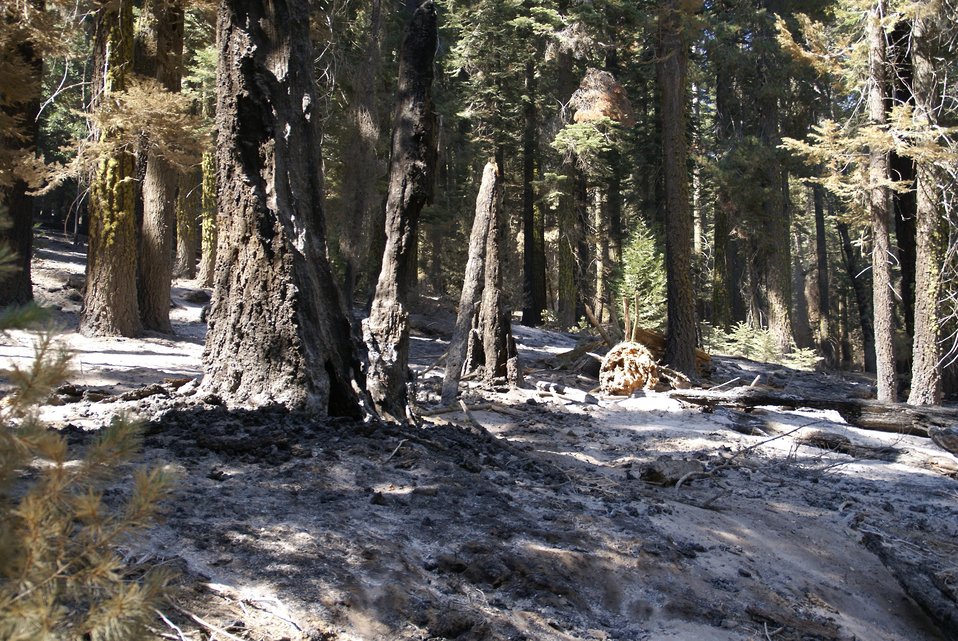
The East side of Bourland drainage area about a half-mile below the 3N01 road shows damage from the Rim Fire. BAER is a rapid assessment of burned watersheds by a BAER team to identify imminent post-wildfire threats to human life and safety property and critical natural or cultural resources on National Forest System lands and take immediate actions to implement emergency stabilization measures before the first major storms. Fires result in loss of vegetation exposure of soil to erosion and increased water runoff that may lead to flooding increased sediment debris flows and damage to critical natural and cultural resources. BAER team members implement seeding and mulching installation to prevent erosion, erect temporary water run-off control structures that will protect recovering areas, and installation of warning signs, replace safety related facilities, remove safety hazards, prevent permanent loss of habitat for threatened and endangered species, and prevent the spread of noxious weeds and protect critical cultural resources. The Rim Fire in the Stanislaus National Forest near in California began on Aug. 17, 2013 and is under investigation. The fire has consumed approximately 256,169 acres and is 84% contained.